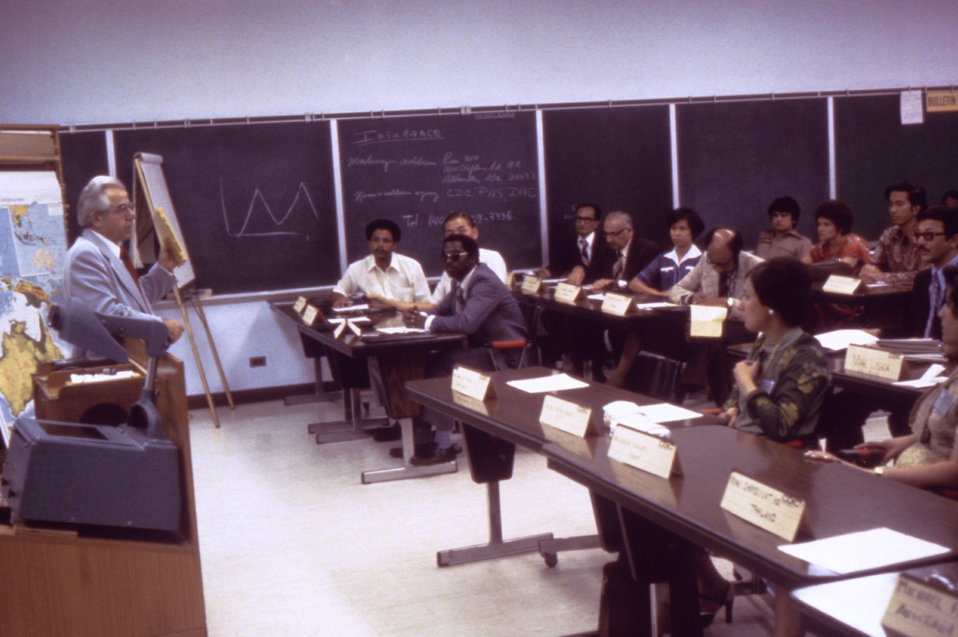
This classroom photograph was taken during a 1970s International Epidemiologists and Health Administrators course.